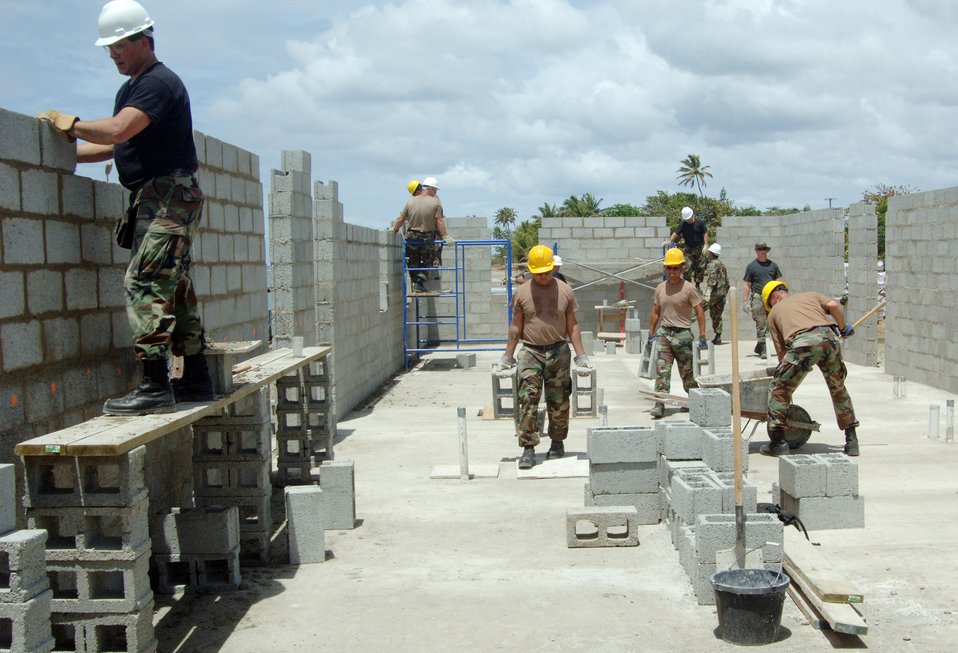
Reserve engineers in Saint Lucia

Reservists from the 433rd Civil Engineer Squadron at Lackland Air Force Base, Texas, and the 445th Civil Engineer Squadron at Wright-Patterson Air Force Base, Ohio, work on a new building for the St. Lucia police force on Saturday, April 8, 2006. The project includes building an operations center and barracks on the southern edge of the island in support of St. Lucia's counter-drug operations.